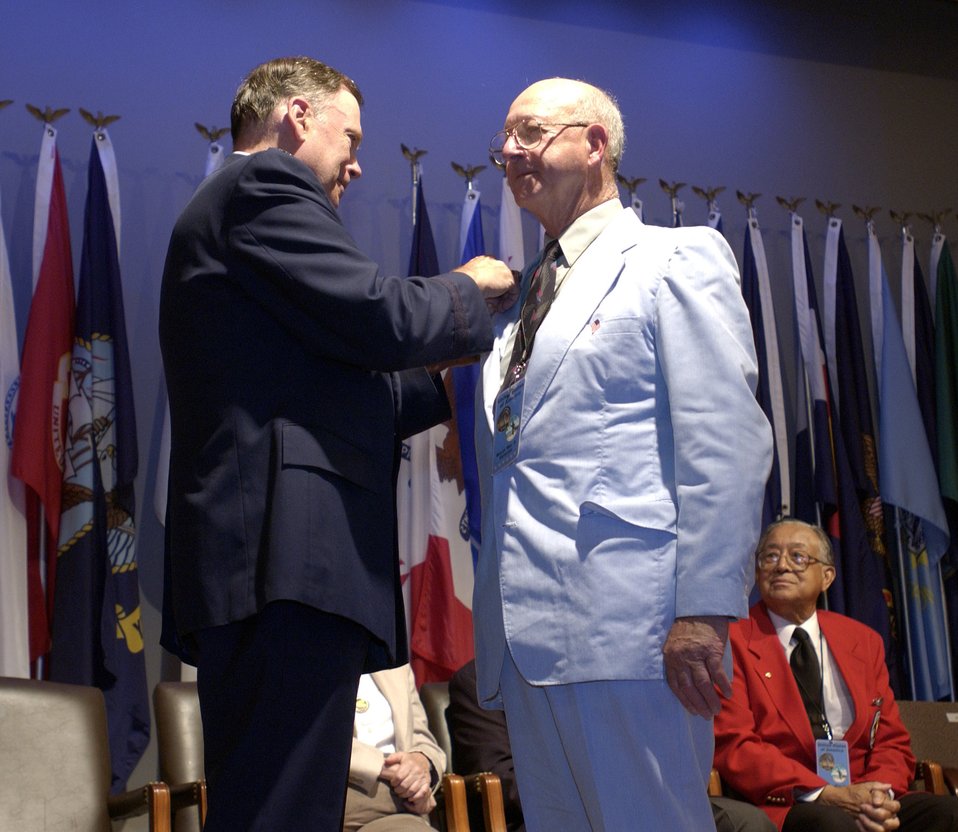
WWII 60th Anniversary Airpower Commemoration Wreath Laying ceremony

WASHINGTON -- Air Force Chief Of Staff Gen. John P. Jumper pins the World War II Honorable Service Lapel Pin on Staff Sgt. Chester Buck June 30 during a reception for World War II veterans, active duty members, family and friends which followed a wreath laying ceremony at Arlington National Cemetery's Tomb of the Unknowns. The ceremony commemorated airpower and the 60th anniversary of World War II. The lapel pin, known as the Ruptured Duck because of its design, depicts an eagle inside a wreath. It was issued to service men and women who were about to leave the military with an honorable discharge. Sergeant Buck served as a crew chief during World War II.